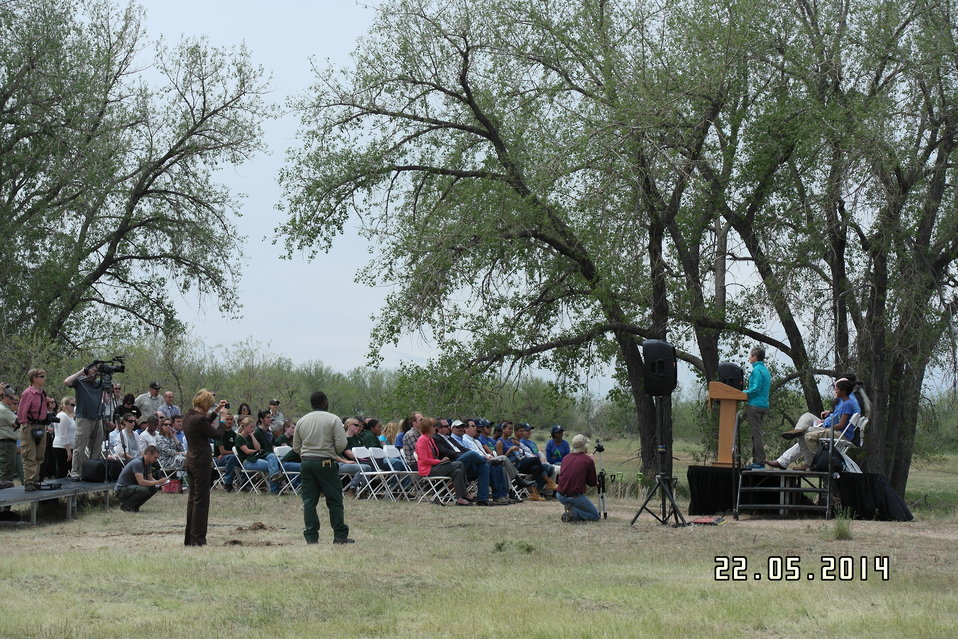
Secretary Jewell Announces $6.7 for Youth Conservation Jobs

Jewell made the announcement at an event at Rocky Mountain Arsenal National Wildlife Refuge outside Denver, Colorado, where she was joined by U.S. Department of Agriculture (USDA) Deputy Under Secretary for Natural Resources and the Environment Arthur “Butch” Blazer; Greg Knadle, Vice President for Government Relations of the National Fish and Wildlife Foundation (NFWF); Refuge Manager David Lucas and youth corps members of Groundwork Denver.